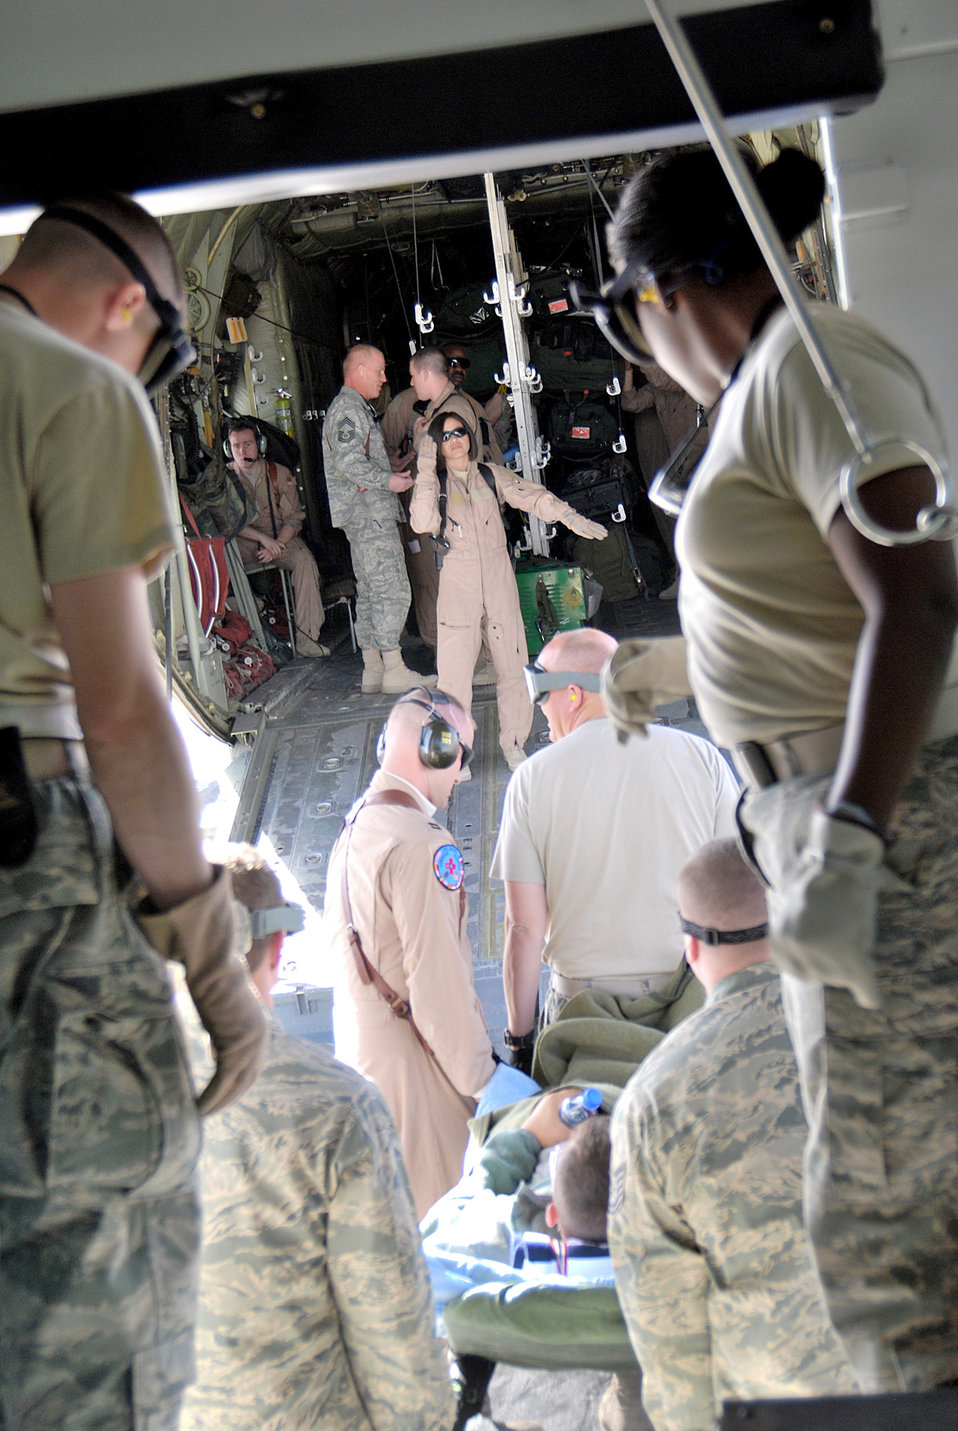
Holloman Airmen provide 5th generation fighter support

Staff Sgt. Edward Harris holds a tether line during the unloading of two T-38 Talons Dec. 14, 2010, at Holloman Air Force Base, N.M. The aircraft were transported here using NASA's Super Guppy aircraft and are the first two of 15 to be shipped here. The aircraft were used by South Korea for training and will now be regenerated and used as fifth generation fighter support. Holloman AFB officials will regenerate the T-38s before they are sent to Joint Base Langley-Eustis, Va. and Tyndall AFB, Fla. Sergeant Harris is assigned to the 49th Aircraft Maintenance Squadron.